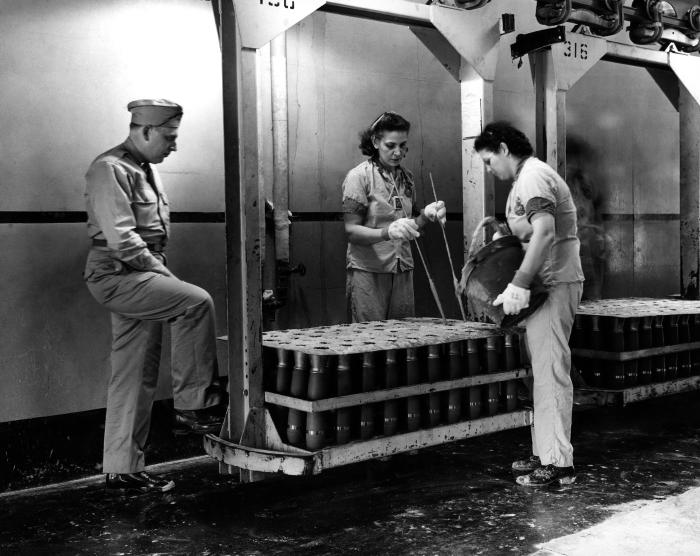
This photograph, provided by the Center for Disease Control's (CDC), National Institute for Occupational Safety and Health (NIOSH), depicted a male Public Health Service (PHS) officer as he was observing the workflow of two female 'shell pourers', inside a military TNT (trinitrotoluene) ordnance factory. A poisonous chemical, TNT will irritate the skin upon contact, and actually will change the skin's color to a bright yellow-orange. Prolonged exposure leads to liver damage, anemia, enlargement of the spleen, and a compromised immune system, to name a few of its negative effects. Trinitrotoluene is also a known carcinogen. Neither the women, nor the officer were wearing any protective filtered breathing masks, however, the women were wearing gloves.